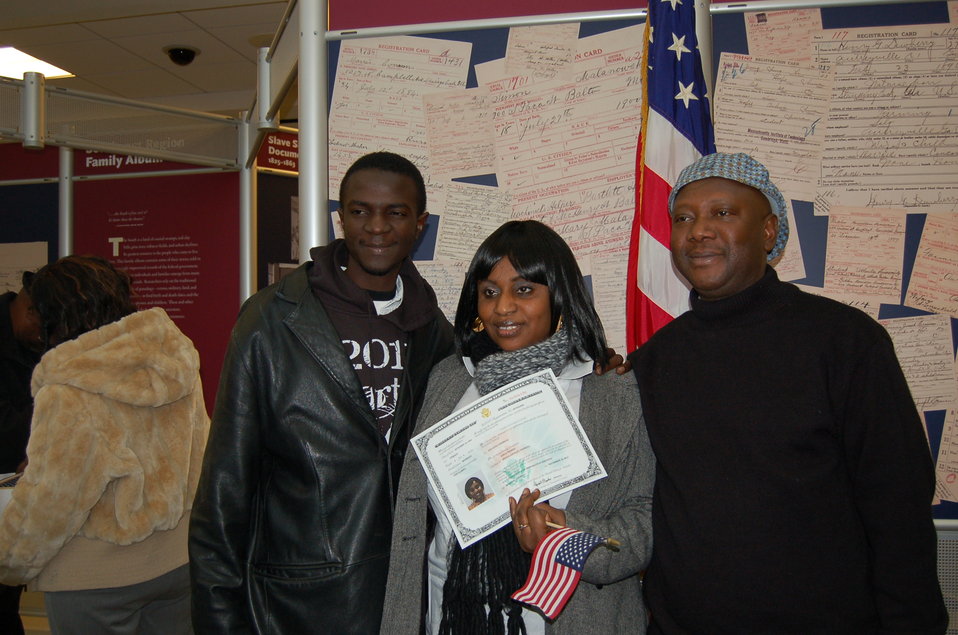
New Citizens